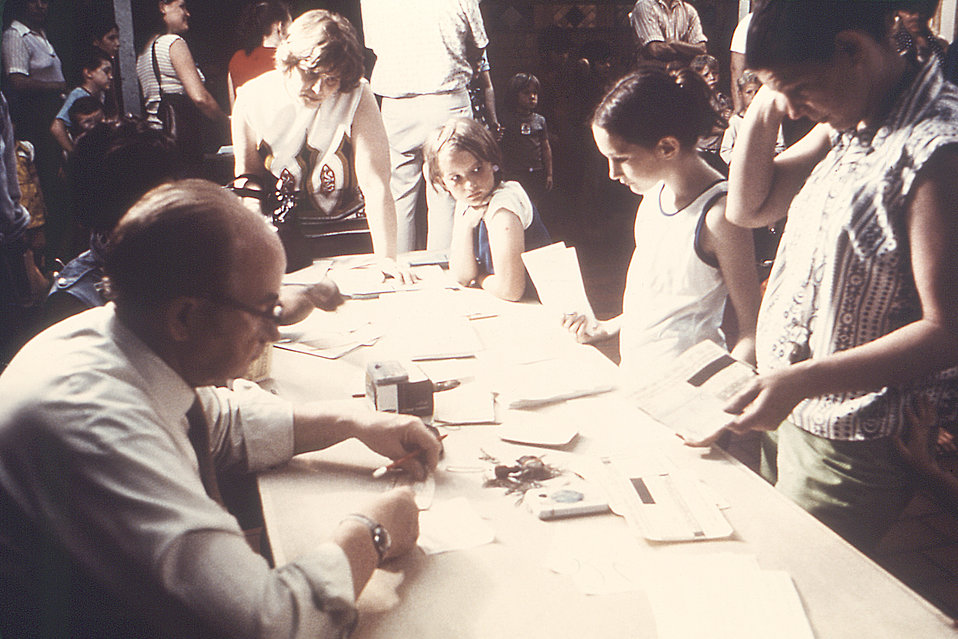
This image was captured during an Measles Outbreak Control Program, which had taken place in Detroit, Michigan, in 1975. In this particular view, two program participants were seated at a registration table accepting appropriate documentation from program attendees, who at this point, were three young girls, and an adult woman, possibly the mother of one or more of the girls, who was standing at the far end of the table, asking questions about the program.